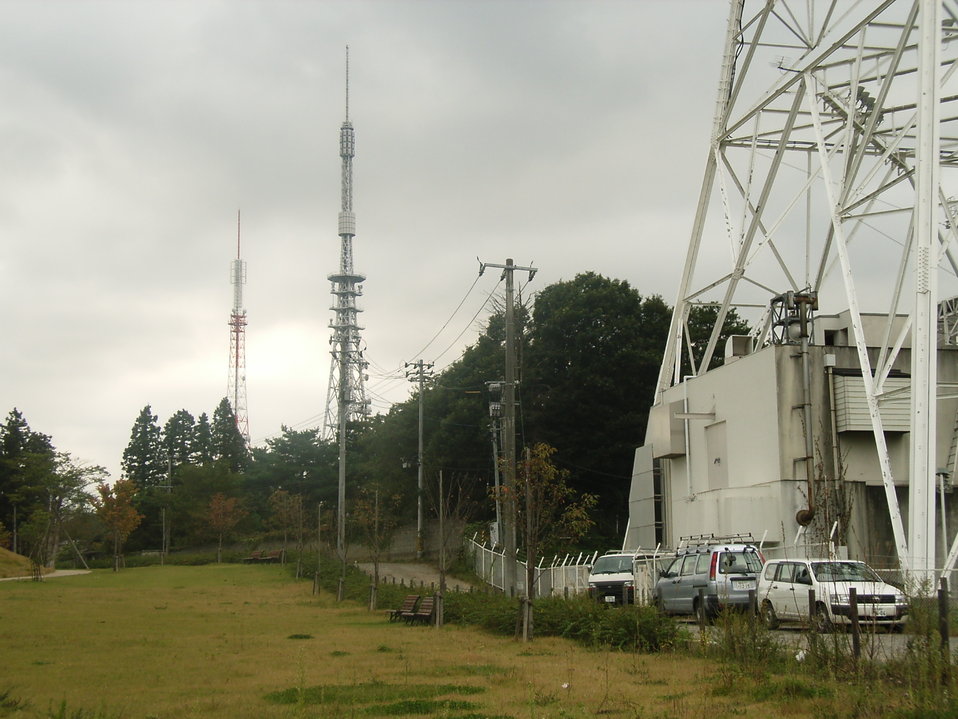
DainenjiYama2005-10-6